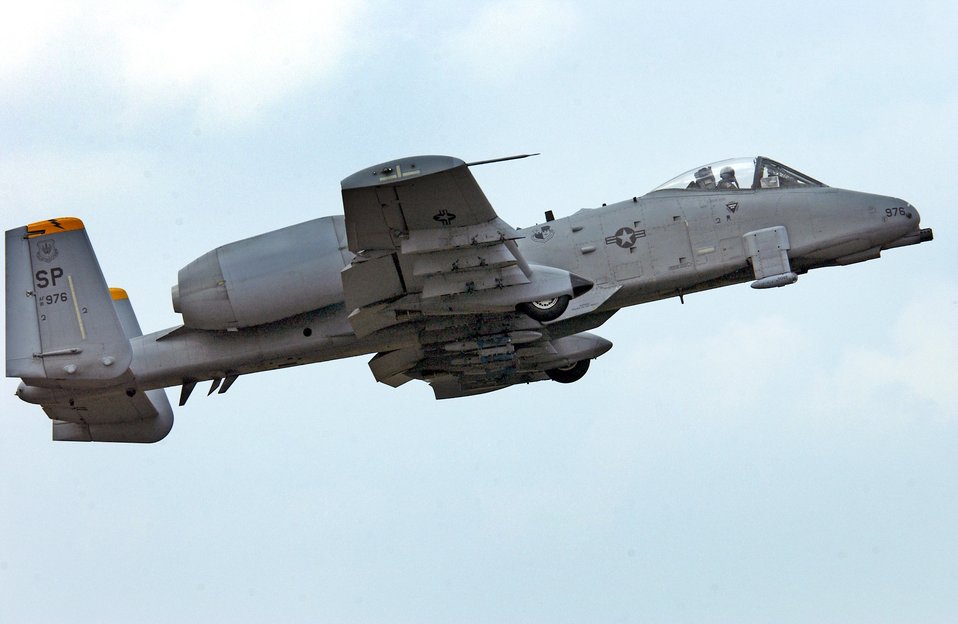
NATO, USAFE vie during Excalibur bombing competition

ROYAL AIR FORCE LAKENHEATH, England -- An A-10 Thunderbolt II from the 81st Fighter Squadron at Spangdahlem Air Base, Germany, takes off from here and heads toward a bombing range. The Excalibur bombing competition was established to foster friendly relations between U.S. Air Forces in Europe and NATO, to increase esprit de corps among pilots and to show basic visual bombing skills.